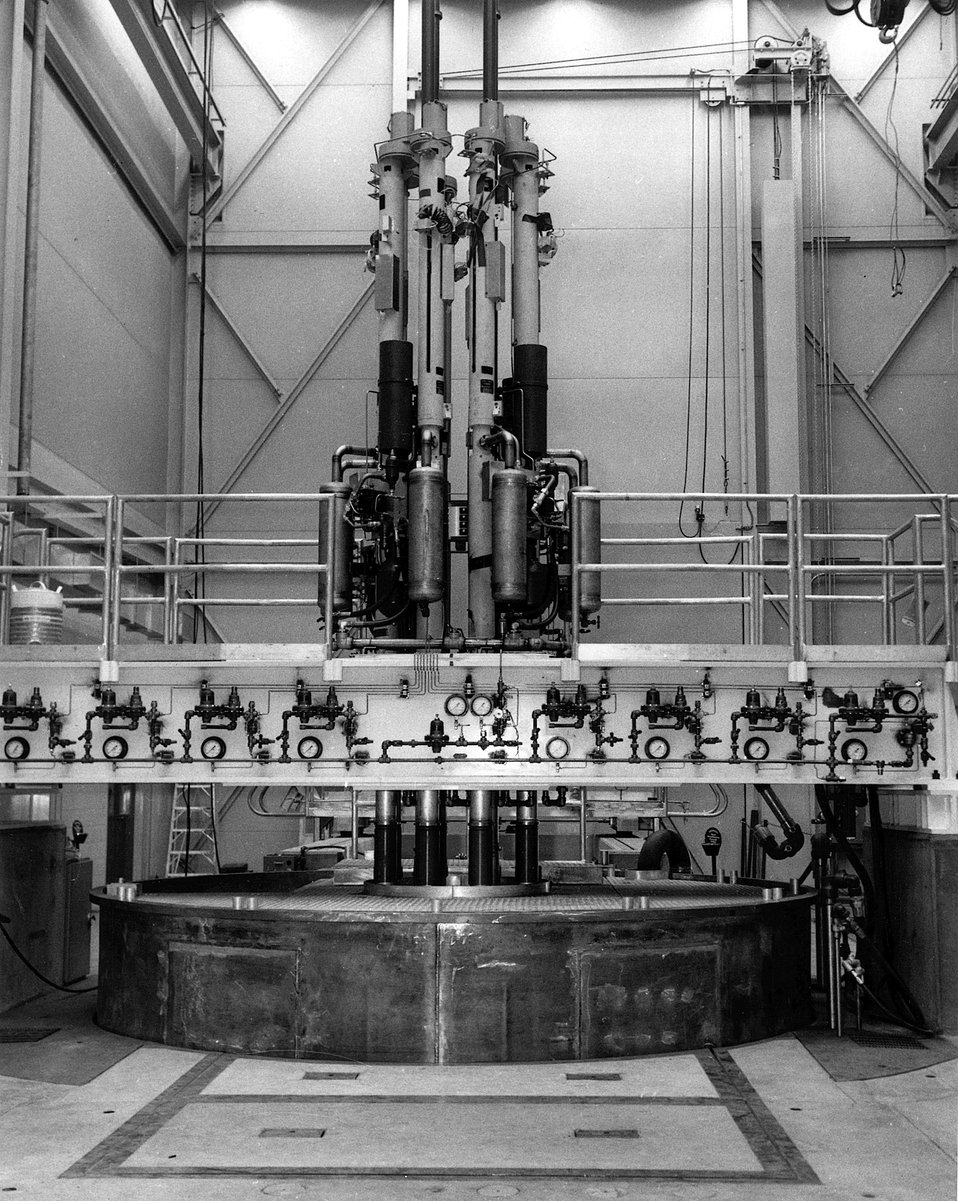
The Power Burst Facility (PBF) at the National Reactor Testing Station is a unique testing tool to obtain data on the performance of fuel rod clusters under abnormal power, flow, and energy density conditions. Circa 1974.